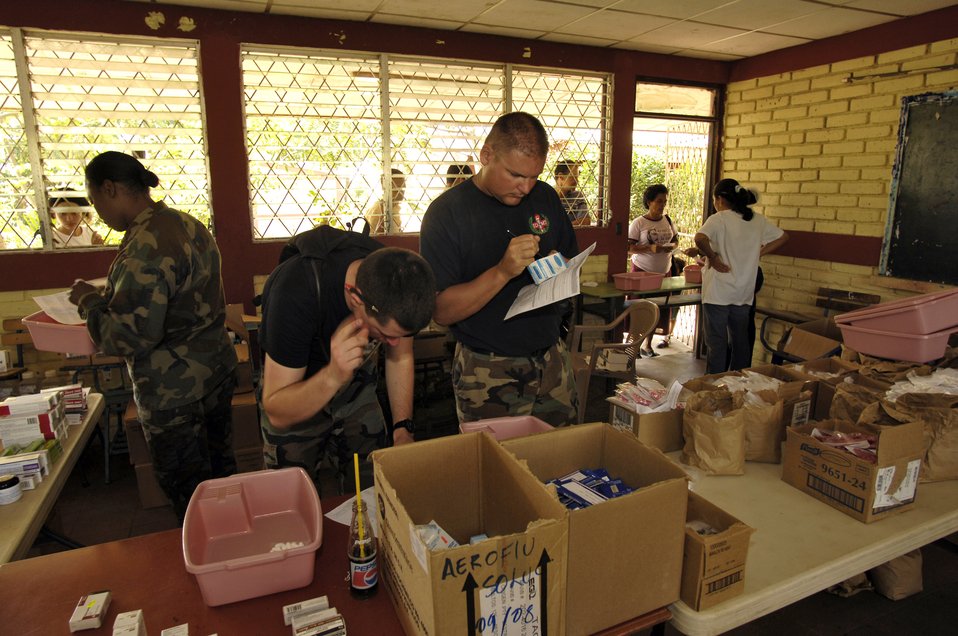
Airmen complete Nicaraguan medical exercise

Airmen and local health officials operate a temporary pharmacy out of a school in Santa Teresa while participating in Medical Readiness Training Exercises Feb. 26 during New Horizons - Nicaragua 2007. The $7.25 million joint U.S. and Nicaraguan military humanitarian and training exercise, provides a new school and medical clinic, as well as free health and veterinary care, giving aid and strengthening bonds between the two nations. The Airmen are deployed from the 820th Expeditionary RED HORSE Squadron.